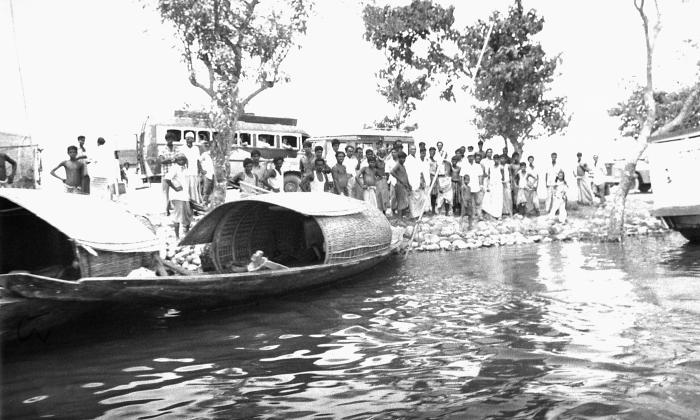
This image depicted the typical river craft used to transport people, and goods along the Bangladesh waterways alongside a street upon which a number of buses were parked in the background. This photograph provided by Dr. Stan Foster, and captured by Pierre Claquin, M.D., B.A.C., who at the time was a member of the World Health Organization's Smallpox Eradication Program. It was part of a series photographed by former E.I.S. officer, Stanley O. Foster M.D., M.P.H., and was one of a series entitled 'The Story of One Smallpox Jeep', which depicted the travails faced by the jeep, and its occupants of public health practitioners, as they road through the Bangladesh countryside in an attempt to eradicate smallpox from the country.